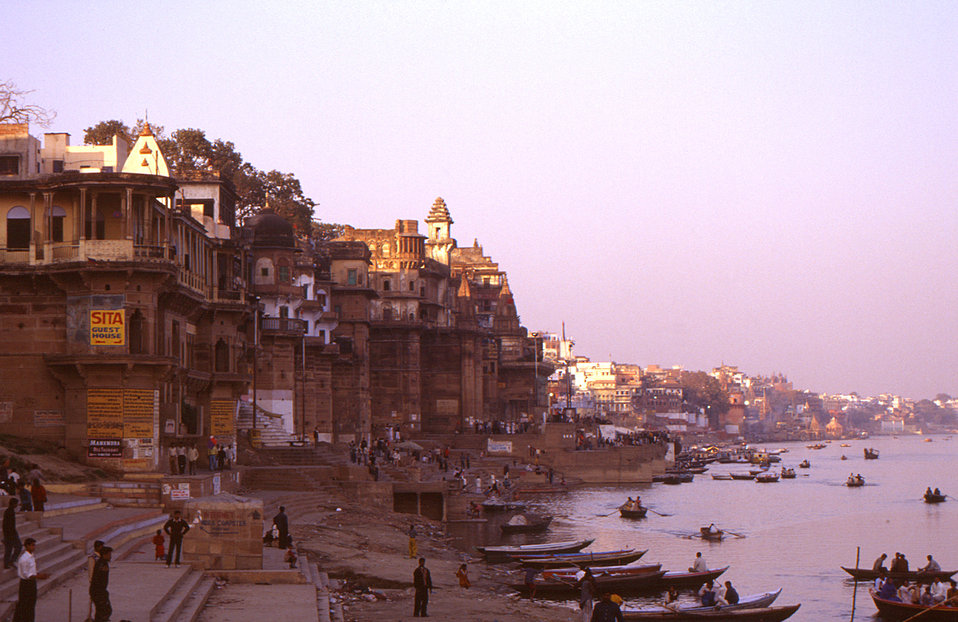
The Indian city of Varanasi is situated on the banks of the sacred Ganges River, and is one of the holiest places in India. On a daily basis, people frequent the steps, or ghats along the Ganges River. This image was captured from one of the riverbank ghats as the river passed through the city, which has been a center of learning and civilization for over 2000 years, and claims to be one of the oldest cities in the world.. It is to the riverbank ghats that pilgrims flock in order to bath in the Ganges River's holy waters. It is through this bathing ritual that one may be absolved from all sins.